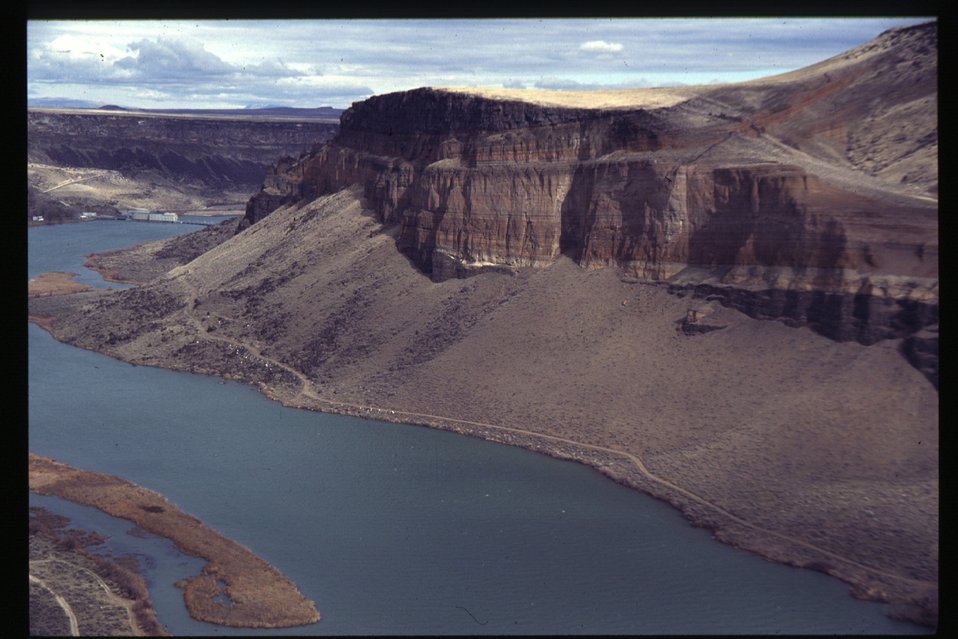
Cliffs above Swan Falls Snake River Canyon Owyhee Field Office LSRD Lower Snake River District